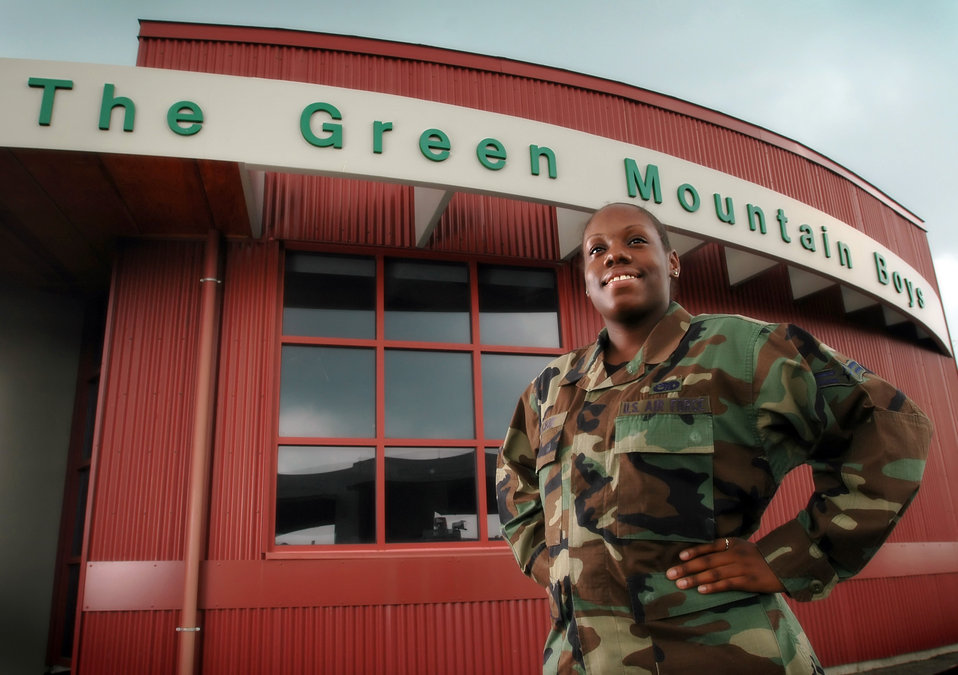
Future Total Force arrives for duty in Vermont

SOUTH BURLINGTON, Vt. -- Airman 1st Class Kirshell LaCroix began training with the Vermont Air National Guard's 158th Fighter Wing as part of a Future Total Force initiative. She is an active-duty electrical and environmental aircraft maintenance apprentice from Shaw Air Force Base, S.C.